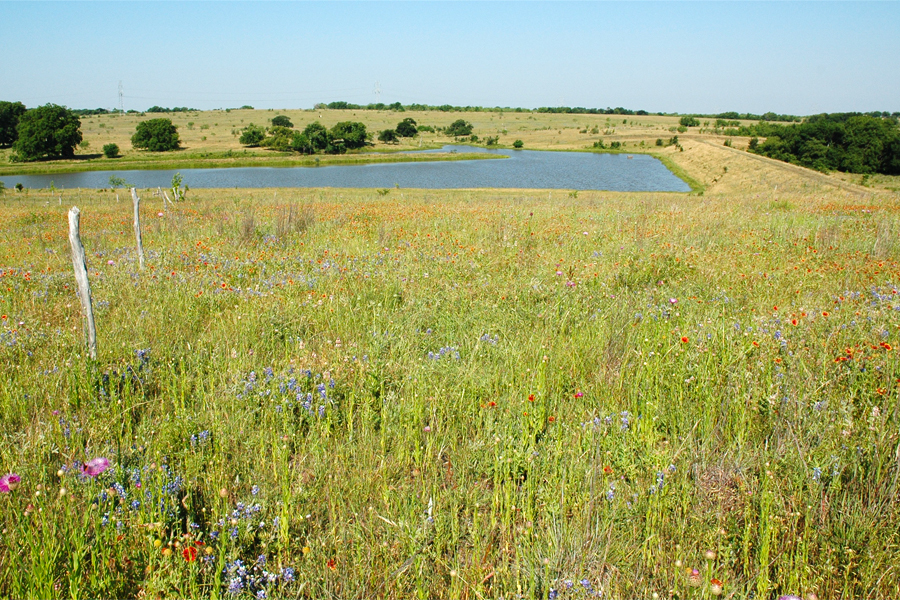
Field view

Texas ranchers Sue and Gary Price have been working with the U.S. Department of Agriculture’s (USDA) Natural Resources Conservation Service (NRCS) and the Navarro Soil and Water Conservation District for over 35 years to implement conservation practices on their ranch which lies in the Trinity River Basin, an area that provides water for over 40 percent of Texans. The Prices converted a portion of their cropland to a wetland and installed a riparian buffer with native plants. Wetlands minimize soil erosion and are excellent wildlife habitat and the riparian buffer acts as a filter while creating habitat for both bobwhite quail and Rio Grande turkey. USDA NRCS launched the National Water Quality Initiative with $33 million dedicated for farmers and ranchers, with financial assistance for any size agriculture operation to help reduce the loss of excess nutrients and sediments from their fields.